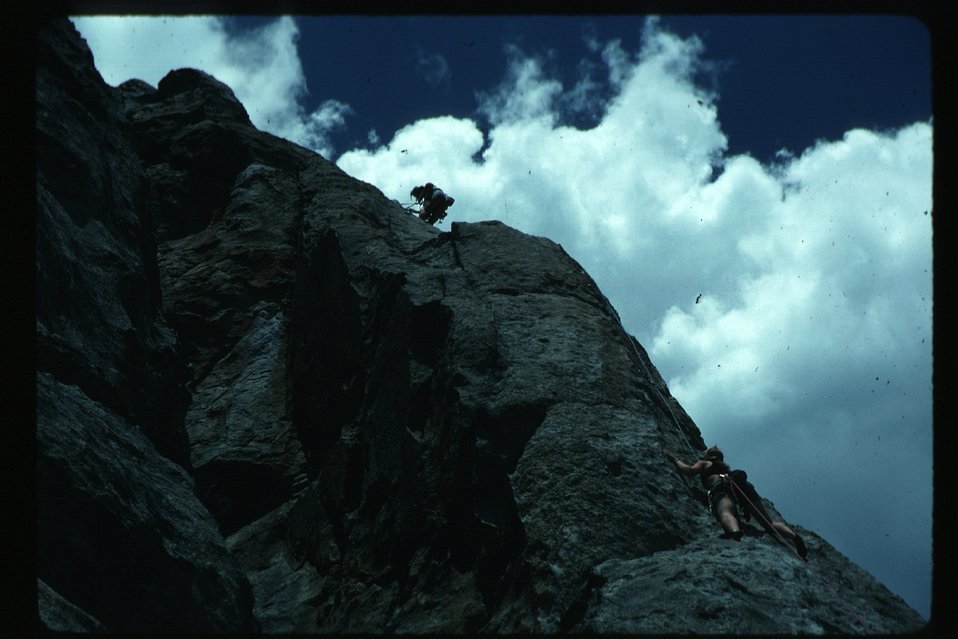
City of Rocks Rock Climbing Geology Burley Field Office USRD Upper Snake River District